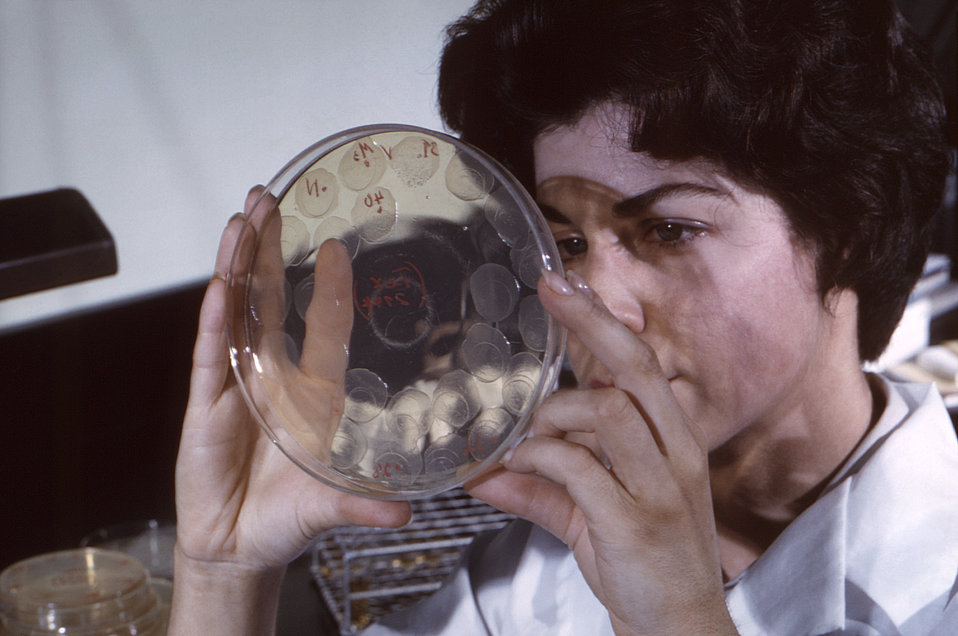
This historic 1963 photograph depicted laboratorian Gail Wathen, as she was performing an examination of an agar culture Petri dish, which had been inoculated with Salmonella typhi, and typed using bacteriophage methods.